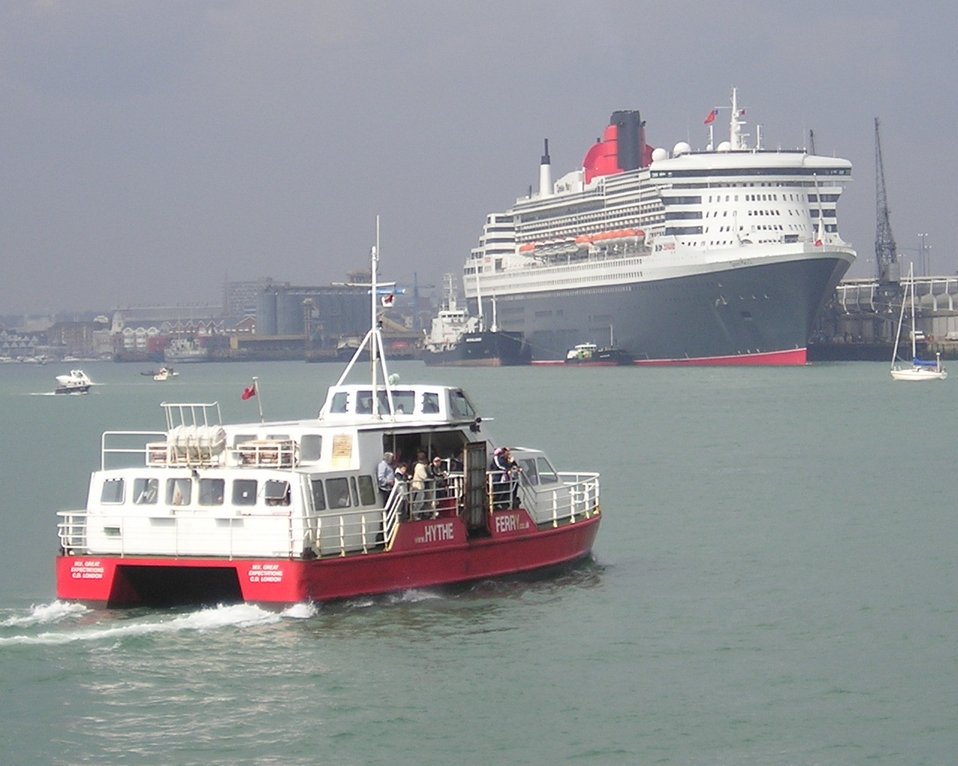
Great Expectations leaving Hythe Pier, Queen Mary 2 in background. 12 April 2004.